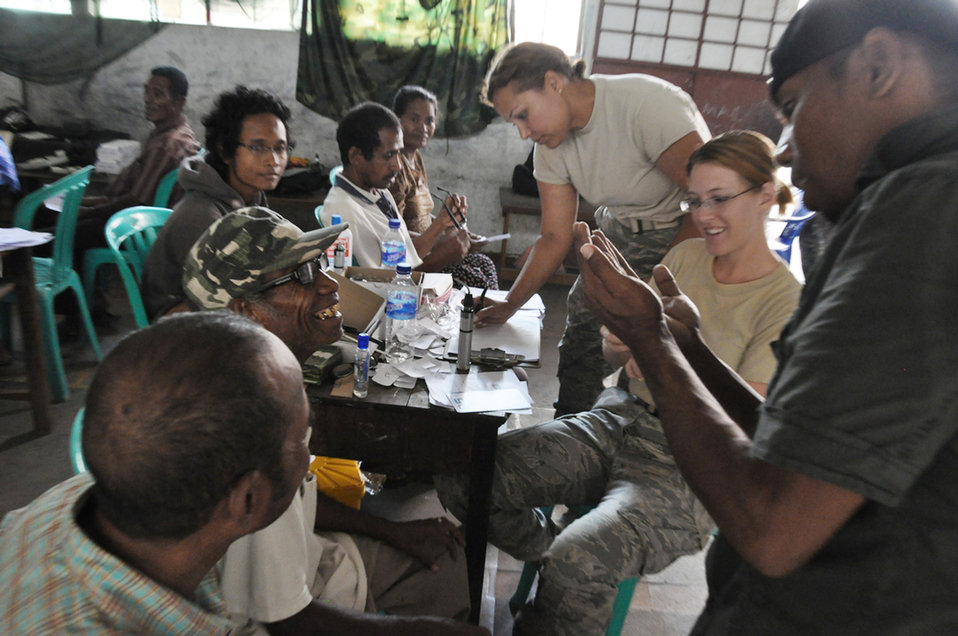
All eyes on total force Pacific Angel team

An East Timorese man smiles as he notices an improvement in his vision with new glasses provided by Capt. Joni Scott-Weideman (center) and Staff Sgt. Jacqueline Cremmins (right) July 20 at a clinic in Dili, Timor Leste. The two Airmen are part of a total force eye specialist team deployed to Timor Leste as part of Operation Pacific Angel 2009.